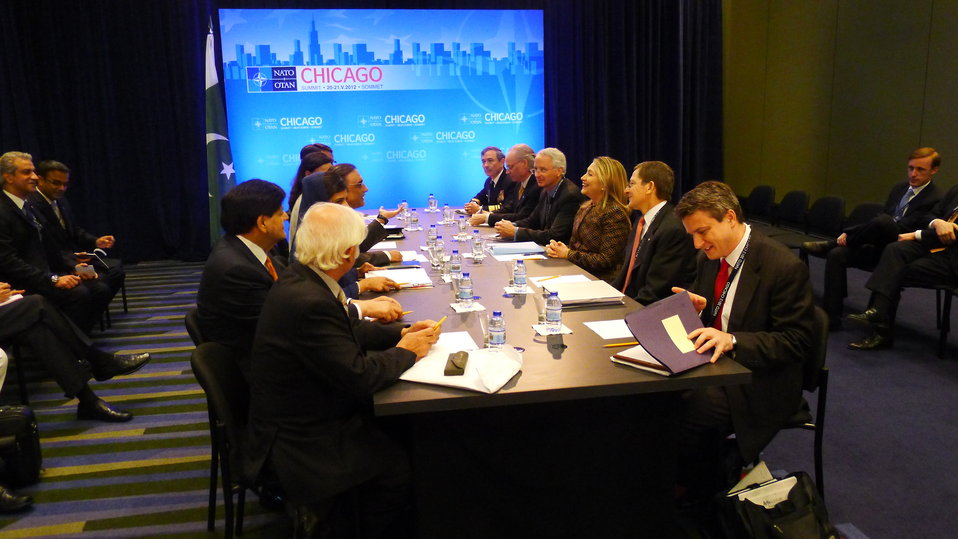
Secretary Clinton Meets With Pakistani President Zardari

U.S. Secretary of State Hillary Rodham Clinton meets with Pakistani President Asif Ali Zardari in Chicago, Illinois, on May 20, 2012.